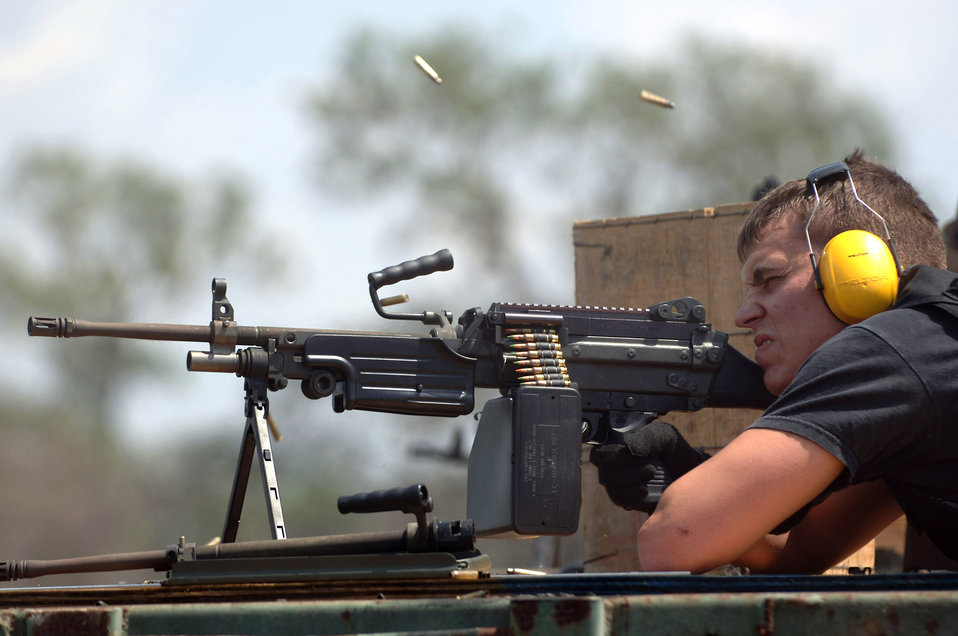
Combat arms training

Senior Airman Tyler Strine fires an M249 squad automatic weapon during a combat arms training and maintenance class at Avon Park Air Force Range, Fla., on Thursday, May 18, 2006. Airman Strine is with the 6th Security Forces Squadron at MacDill Air Force Base, Fla.